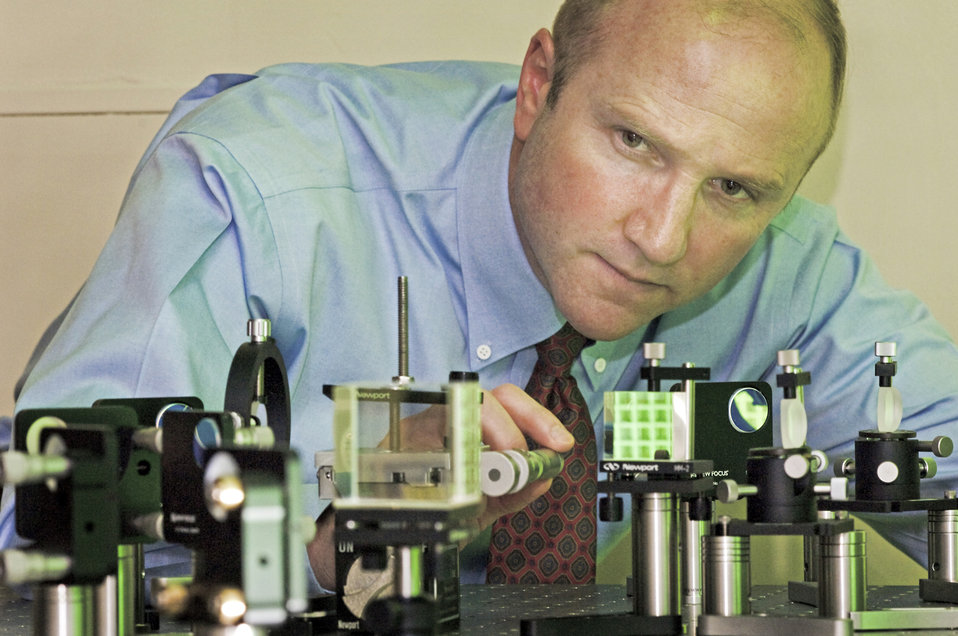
CCAF, Air Force launch pad for astrophysicist's NASA career

Dr. Richard Barry at his NASA work station uses a ditherless quadrature phase detector to find exoplanet tens of trillions of miles from the Earth's solar system. Doctor Barry credited the Air Force and a Community College of the Air Force degree for his academic and professional achievement.